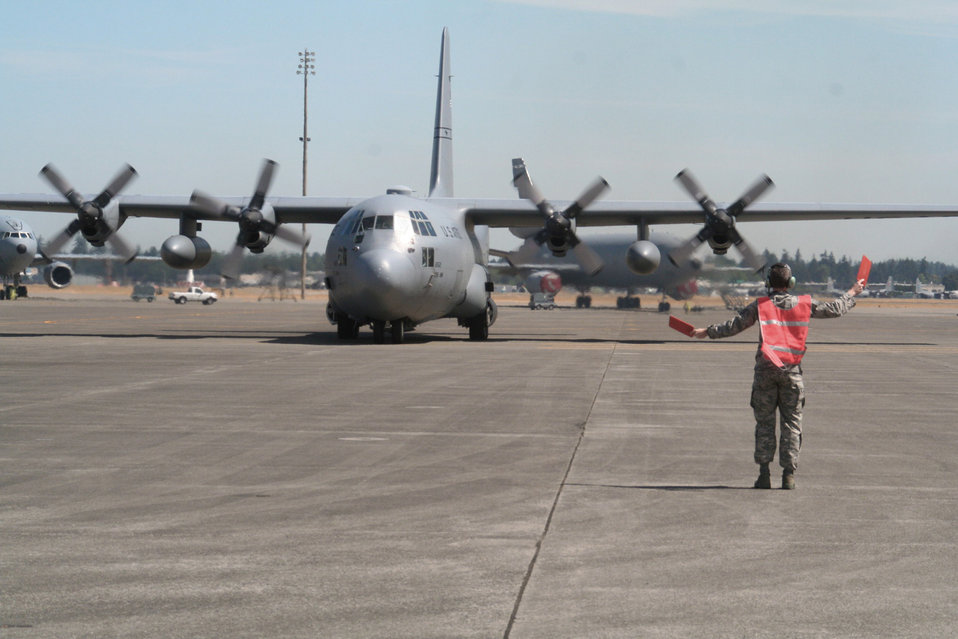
Total force impact evident at Rodeo

A C-130 Hercules from the 139th Airlift Wing of the Missouri Air National Guard taxies after completing a competition mission for Air Mobility Rodeo 2009 July 20 at McChord Air Force Base, Wash. More than 100 teams are participating in the competition including teams from seven foreign countries.